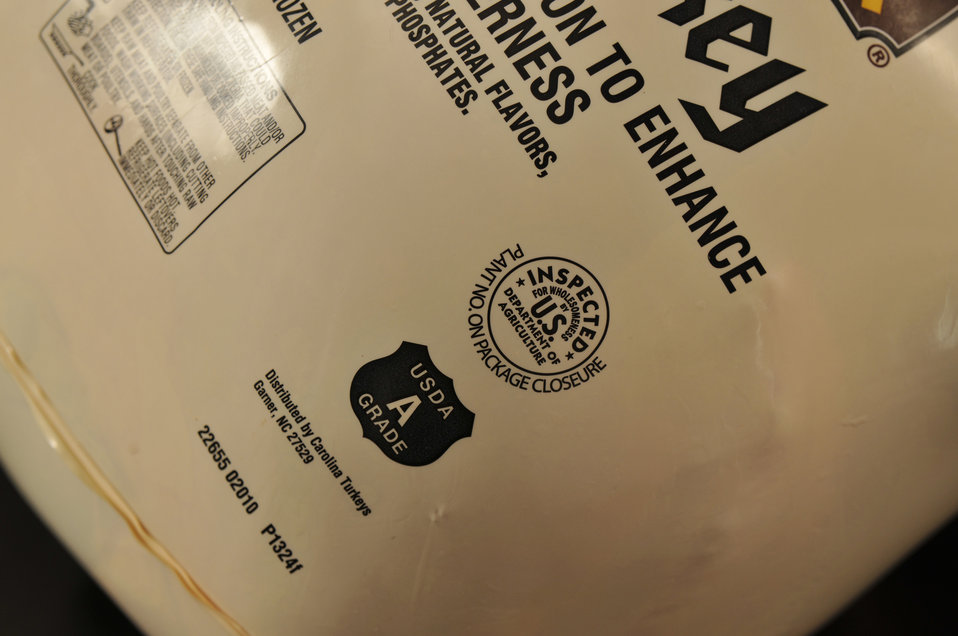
U.S. Department of Agriculture (USDA) Agricultural Marketing Service (AMS) Poultry Programs grades wrapped turkeys at the Butterball, LLC Company in Huntsville, Arkansas on March 23, 2010. Chickens, turkeys, ducks, geese, guineas, and pigeons are all eligible for grading and certification services provided by the USDA AMS Poultry Programs’ Grading Branch. These services are provided in accordance with Federal poultry grading regulations.